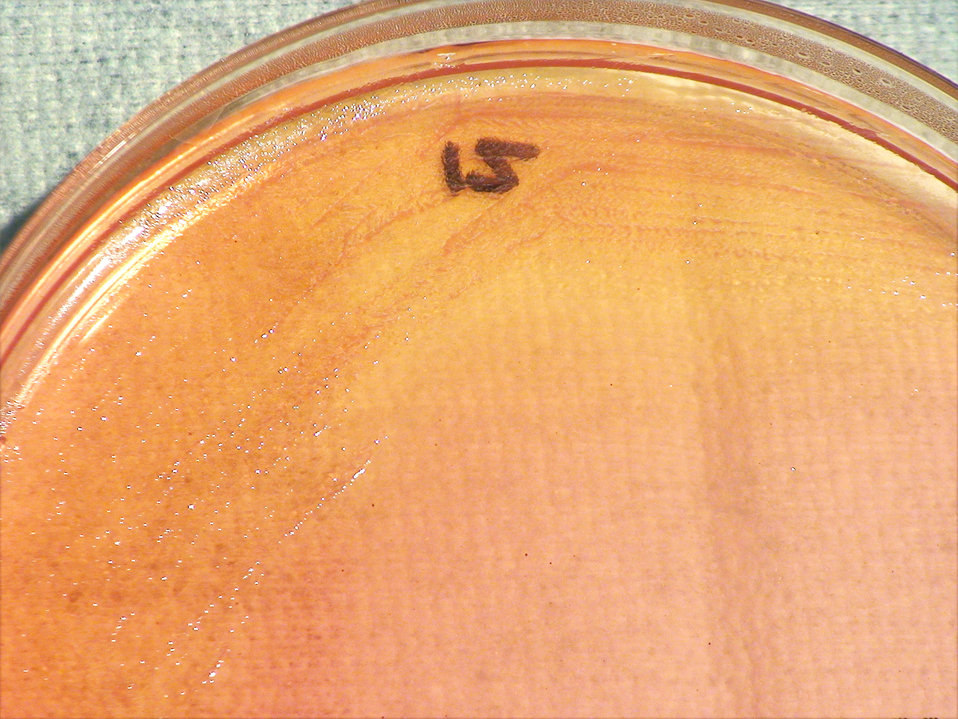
As a closer view of PHIL 12419, this photograph depicts the colonial morphology displayed by Gram-negative Burkholderia thailandensis bacteria, which was grown on a medium of MacConkey agar, for a 24 hour time period, at a temperature of 37�C. Also, see both PHIL 12405 and 12406, for views of this bacterial specie, grown on the same medium, at the same temperature (37�C), however, at a twice the amount of time (48hr), and note that PHIL 12410 and 12411 depict the same bacterial specie grown on the same media, but at a greater temperature (42�C), and greater time period (48hr). Take a look at PHIL 12427 and 12428 colonial growth, on the same medium and for the same amount of time (24hr), but at a greater temperature (42�C).